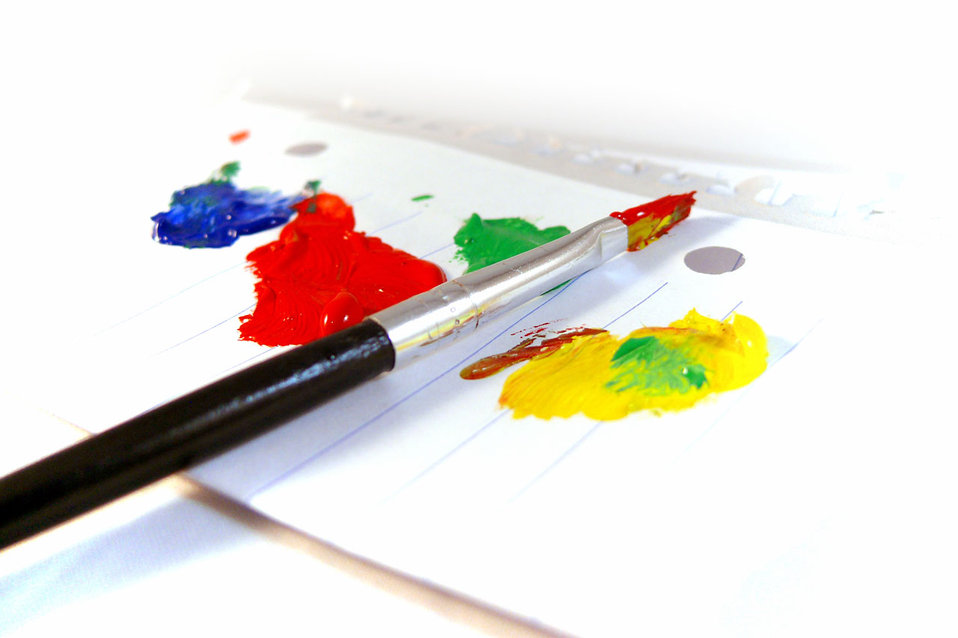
Paintings and paint brush on the paper.